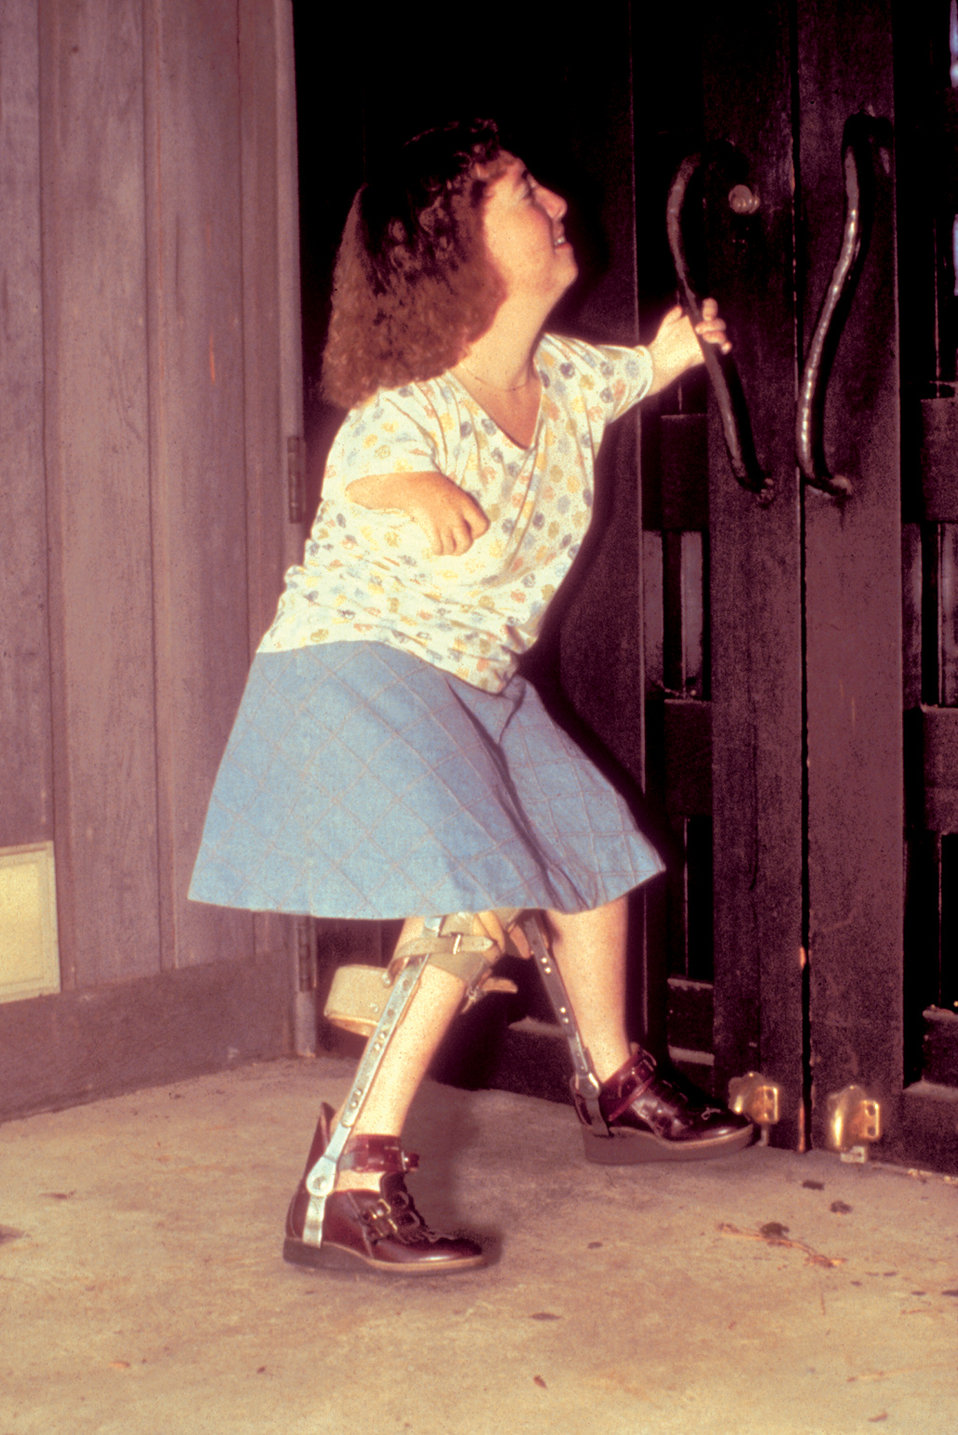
Photographed while attempting to open a large, heavy door, this 1994 image revealed some of the ergonomic issues associated with designing a universally-friendly entrance way. The woman depicted here, was physically challenged by having been born with shortened limbs, and deformations of her hands, which made the acts of grasping and pulling, as in the opening of doors, much more difficult. Therefore, as evidenced in this situation, when designing such portals of entry and exit, physical disabilities need be taken into account in such doorways.